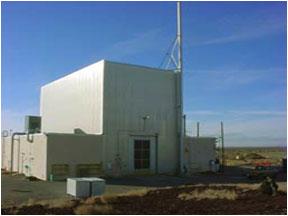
Power Burst Facility (PBF) - Idaho

The Power Burst Facility (PBF) operated from 1972 to 1985 and was primarily used to test the performance of light water reactor fuel elements during transients or sudden bursts of power. In November 2008, all planned decommission and demolition work at the PBF was completed. The scope of the work included the isolation of utilities to the PBF facilities and the removal of asbestos-containing materials.